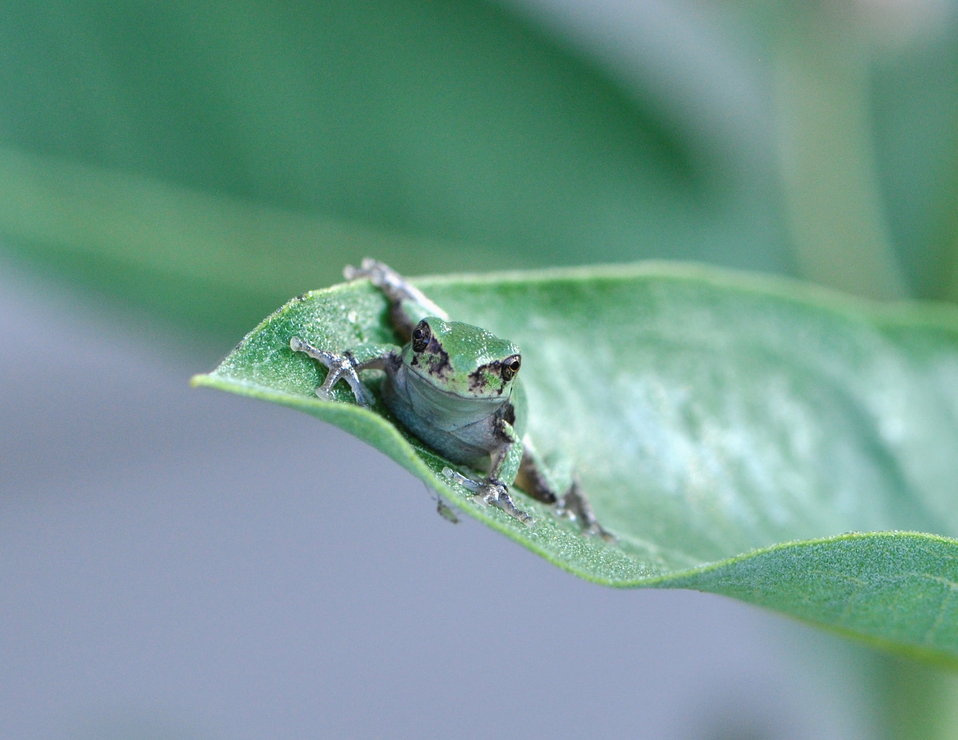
Eastern Gray Treefrog at Horicon National Wildlife Refuge